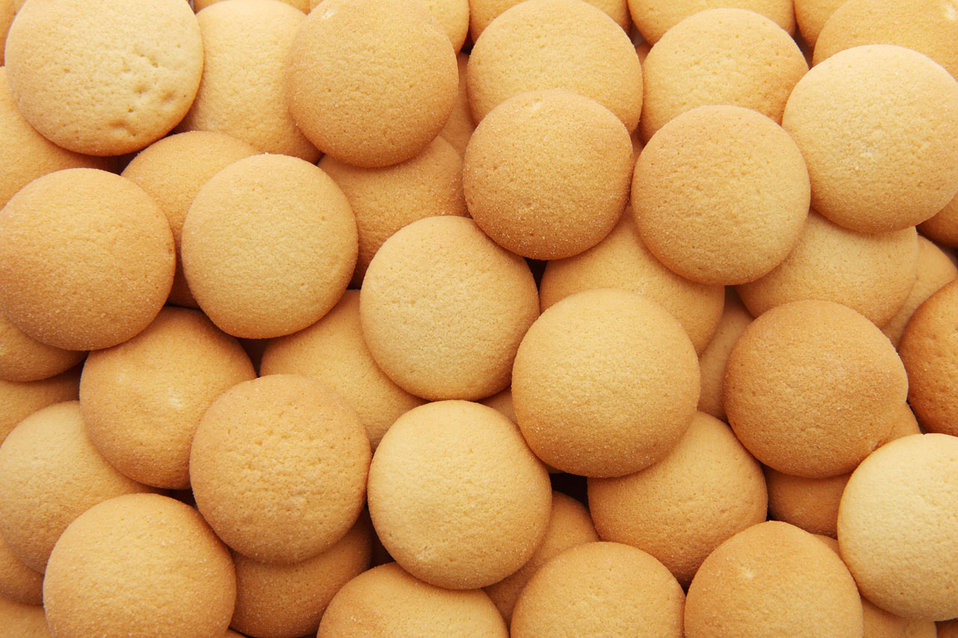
Small cookies

Background from tiny biscuits.